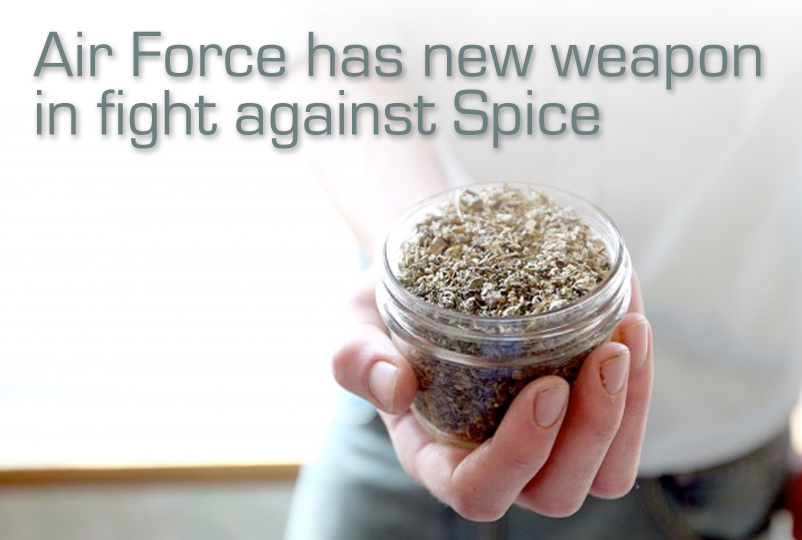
Air Force has new weapon in fight against Spice